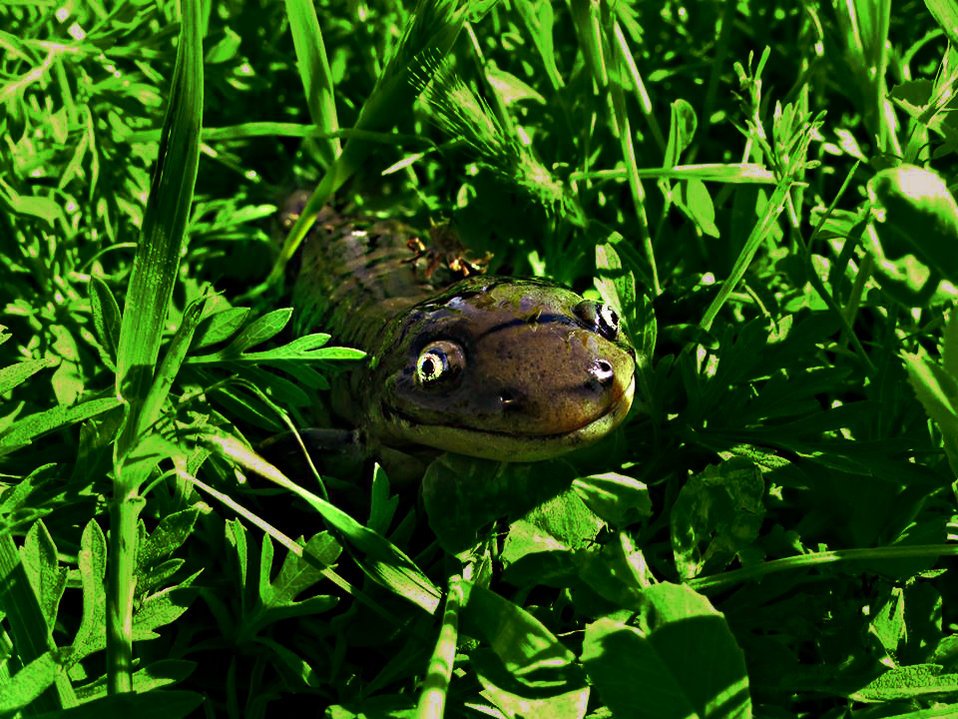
Smiling Salamander

Sometimes the most fascinating critters at the hatchery aren't even fish.

Yesterday during walleye harvest we saw four adult tiger salamanders. Tiger salamanders are rarely seen, as they spend most of their time underground or underwater. Assistant Project Leader, Craig Bockholt, noted these were the first ones that he has seen in years at the hatchery.

Tiger salamanders sport an olive and black camouflage and live off of insects and worms. This guy can now be seen by the public and is apart of our softshell turtle tank at the aquarium!